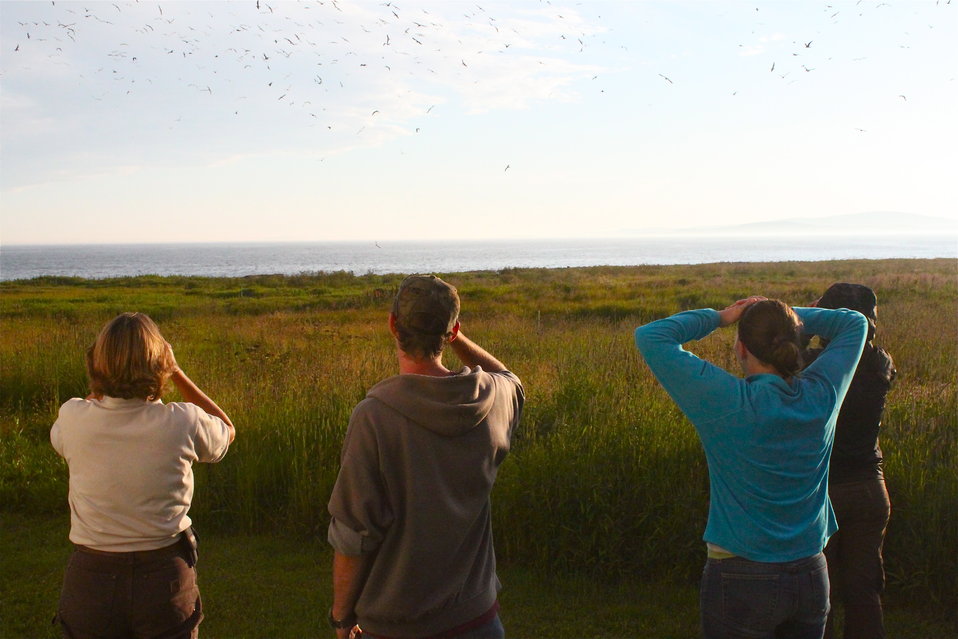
Watching For Predators